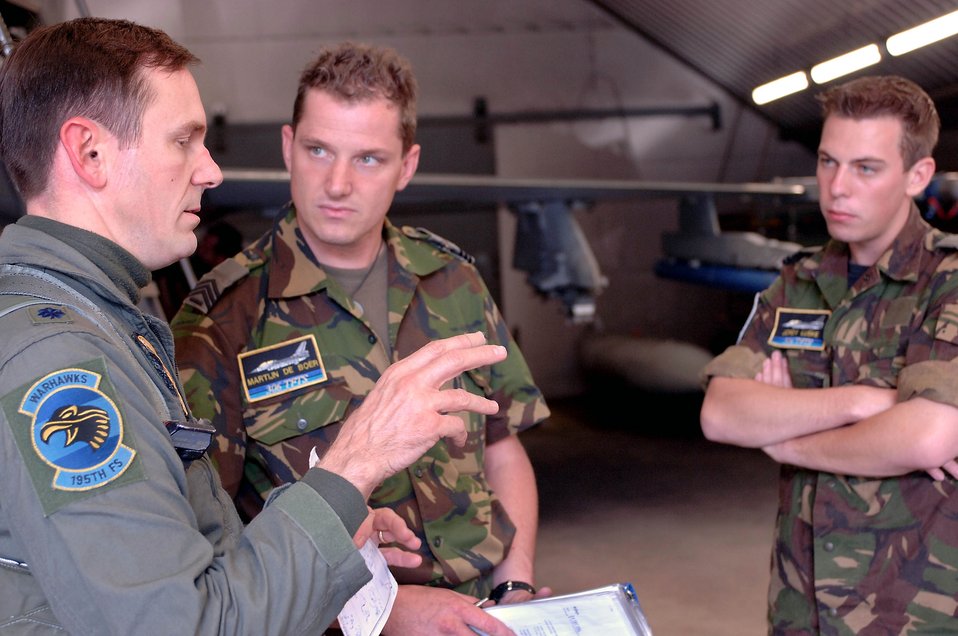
Exchange program connects U.S., Dutch Airmen

VOLKEL AIR BASE, Netherlands -- Lt. Col. David Stein talks about a sortie with Dutch air force crew chiefs Sgt. Martijn De Boer and Cpl. Jordy Luske. The colonel is an exchange pilot from the Arizona Air National Guard's 162nd Fighter Wing at Tucson, Ariz. After a three-year tour with the Dutch air force's 1st Fighter Wing, he will soon return home and pass on what he has learned about the Netherlands's NATO role to his fellow pilots.